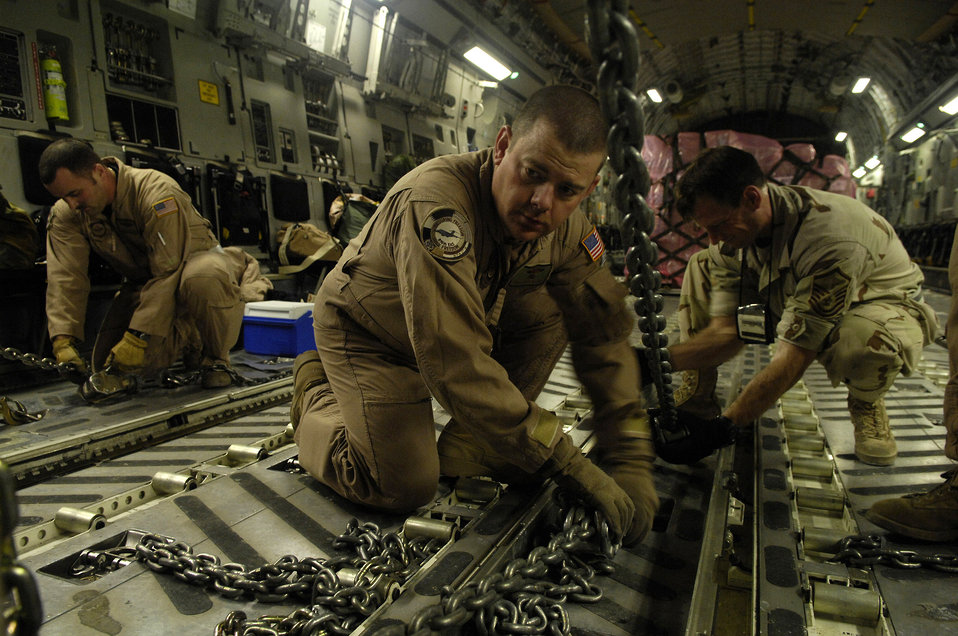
Airmen airdrop 80,000 pounds of food, supplies for Afghans

Tech. Sgt. Brad Pilgrim preflights a C-17 Globemaster III for a Joint Precision Airdrop Delivery System of 40 bundles of humanitarian supplies to a drop zone Jan. 14 in Afghanistan. Sergeant Pilgrim is a loadmaster from the 17th Airlift Squadron from Charleston Air Force Base, S.C., and is deployed to the 816th Expeditionary Airlift Squadron in Southwest Asia.